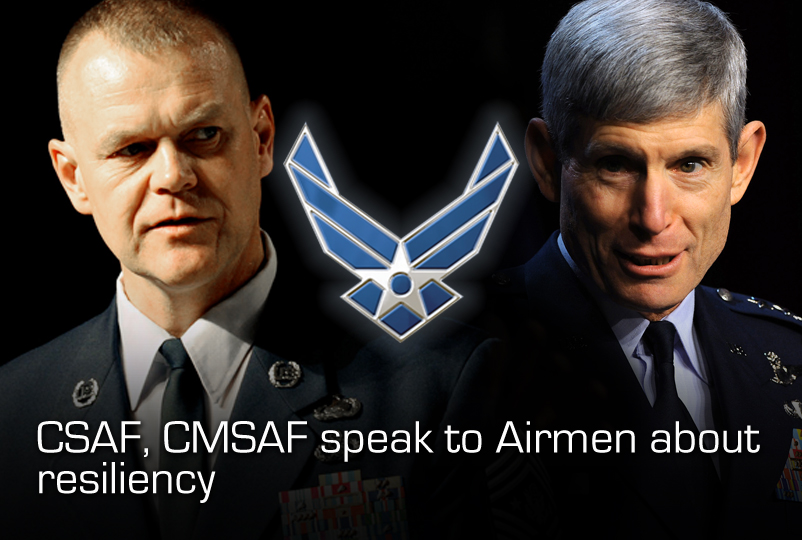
CSAF, CMSAF release suicide prevention PSA's